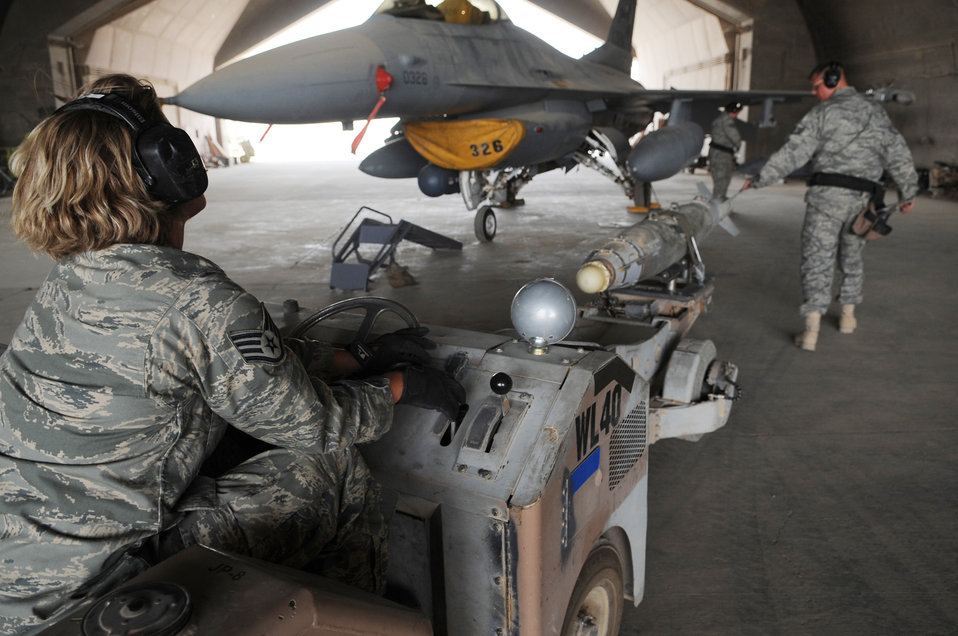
Weapons loaders arm jets for the fight

Airmen from the 332nd Expeditionary Aircraft Maintenance Squadron prepare to load munitions onto an F-16 Fighting Falcon June 29 at Joint Base Balad, Iraq. Weapons loaders deployed here ensure every aircraft is armed properly and safely.